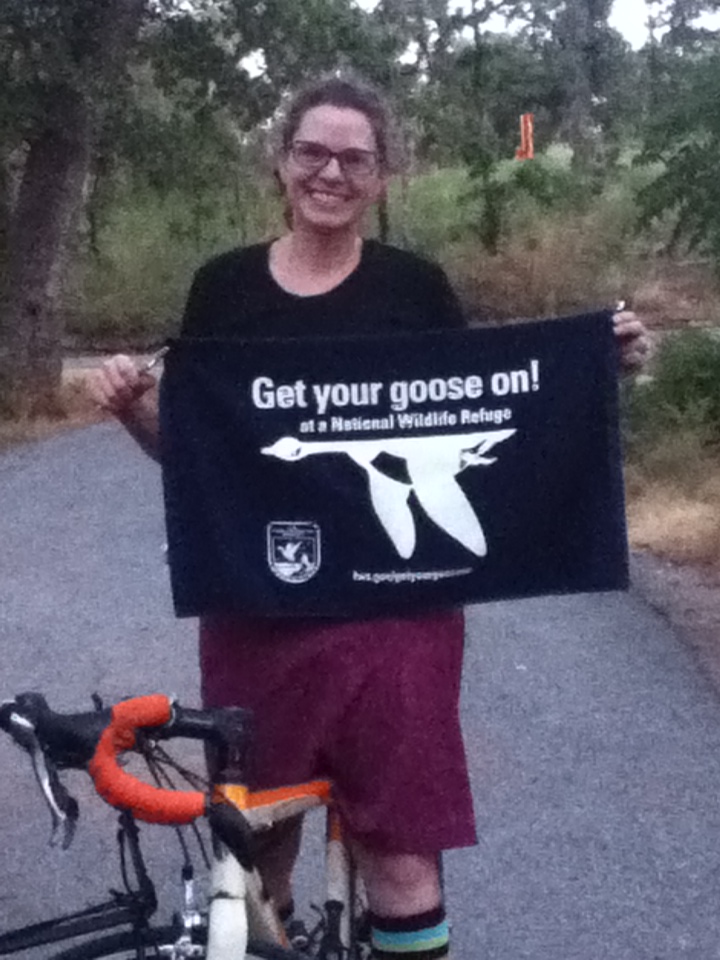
Get Your Goose On!

Wichita Mountains National Wildlife Refuge in Oklahoma.